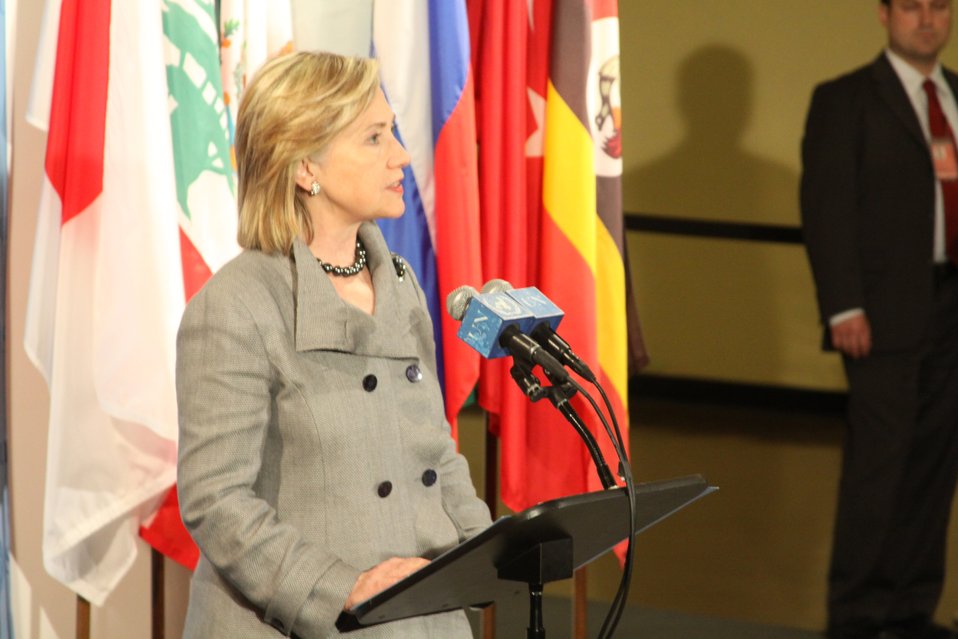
Secretary Clinton Addresses Questions at Press Avail

U.S. Secretary of State Hillary Rodham Clinton addresses questions at a press avail at the U.N. Review Conference of the Nuclear Nonproliferation Treaty, New York, New York, May 3, 2010.